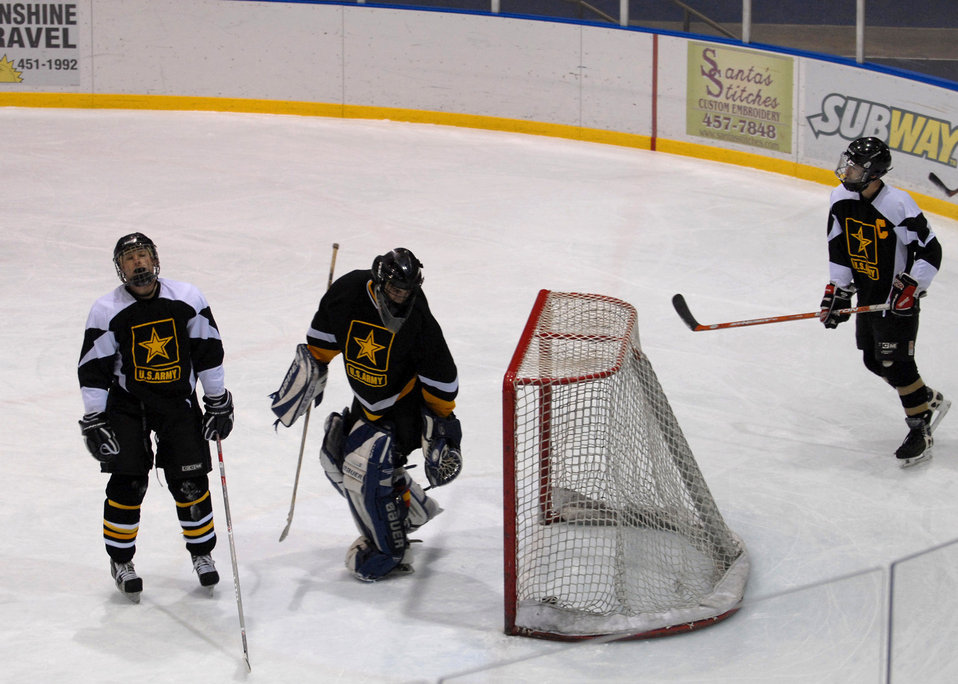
Rumble on the rink

Eielson Air Force Base Icemen score on the Fort Wainwright Grizzlies Jan. 13 at the Big Dipper Ice Arena in Fairbanks, Alaska. Eielson Icemen faced off against the Fort Wainwright Grizzlies in the 11th Annual Interior Alaska Armed Forces Ice Hockey Commander's Cup Game. Eielson Icemen went on to win the game 8 to 6.